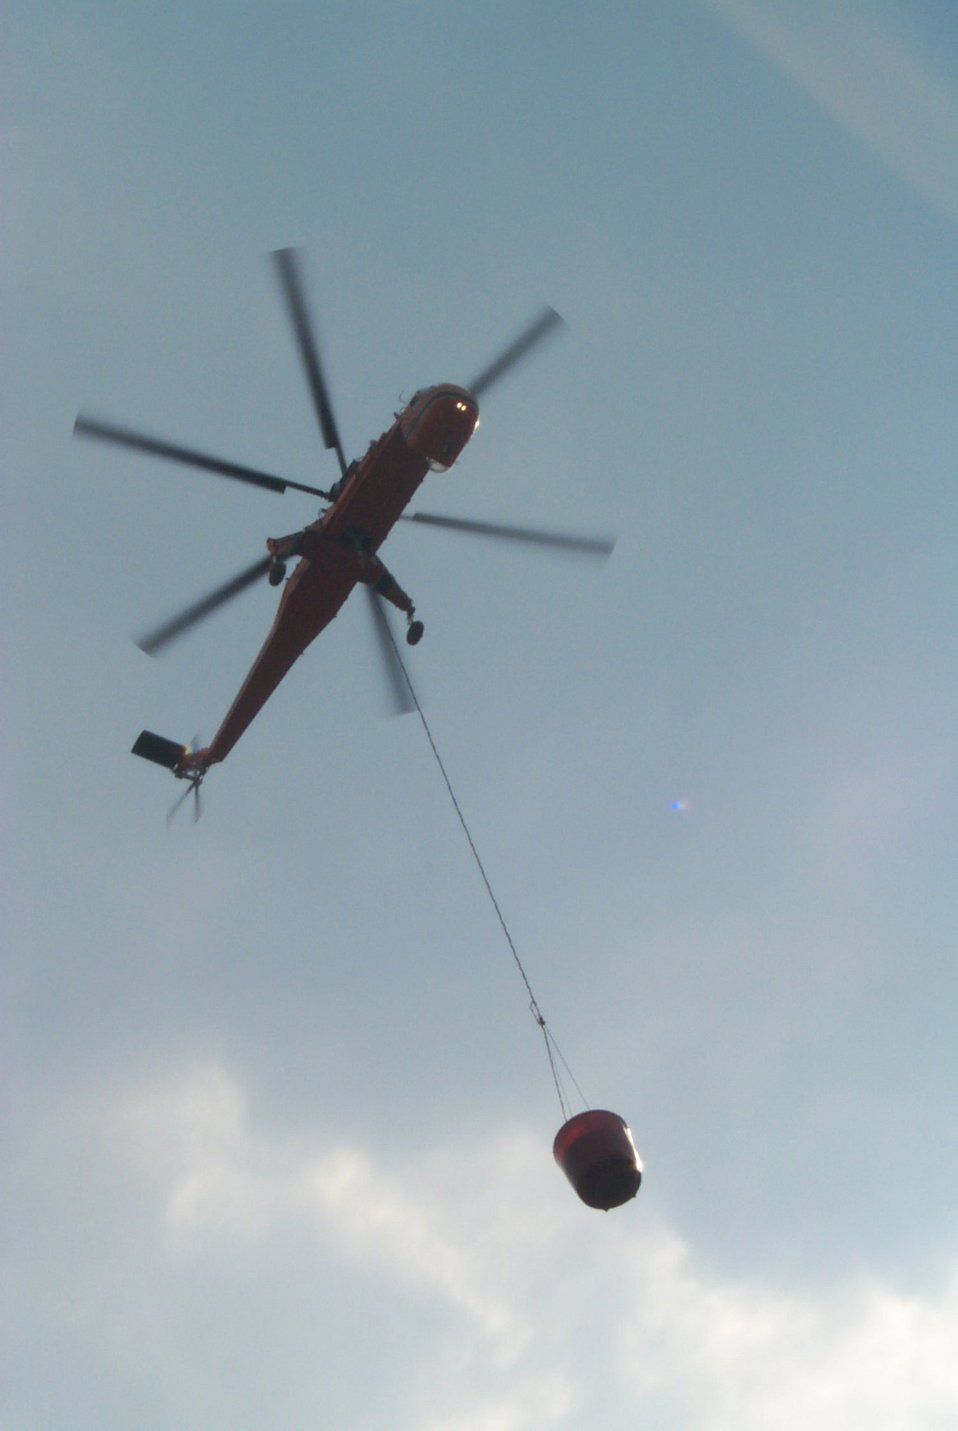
Helicopter drop Fire Clearwater Fire Salmon Field Office USRD Upper Snake River District